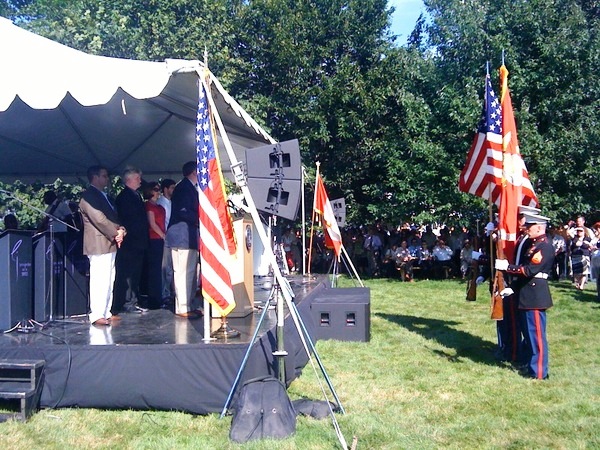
The U.S. Marine Corps Color Guard present the colors at the U.S. Embassy Ottawa in Canada's U.S. Independence Day celebration during the Ambassador's residence in Ottawa, Canada, on July 4, 2010.